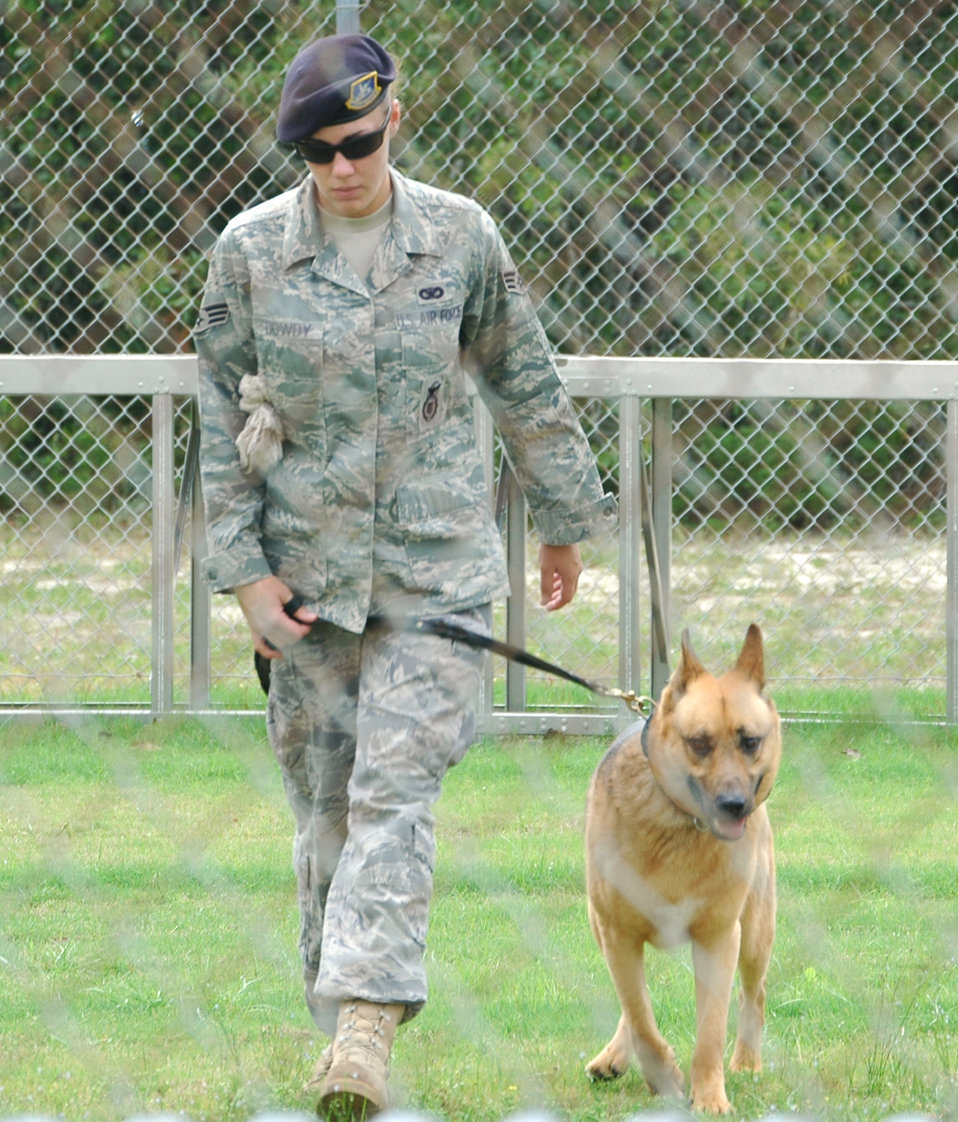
Airmen help Florida youth see inner potential

Senior Airman Carrie Dowdy guides her dog, Ciro, through a